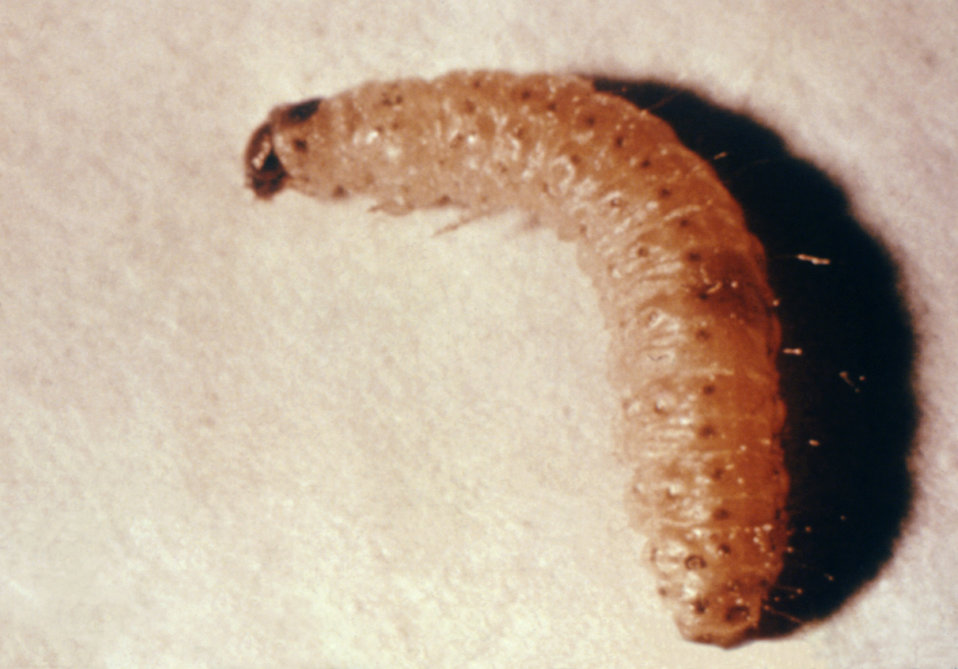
This 'flour moth' larva (family Pyralidae) was taken during a 1972 study of disease carriers and pests of migrant labor camps.